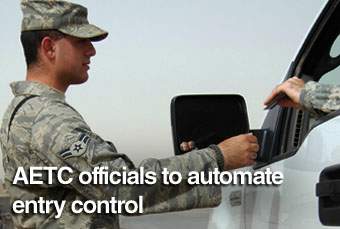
AETC officials to automate entry control

Drivers pulling up at gates on Air Education and Training Command bases will enter bases using the Defense Biometric Identification System where gate guards use hand-held scanners to read the bar codes on common access cards.